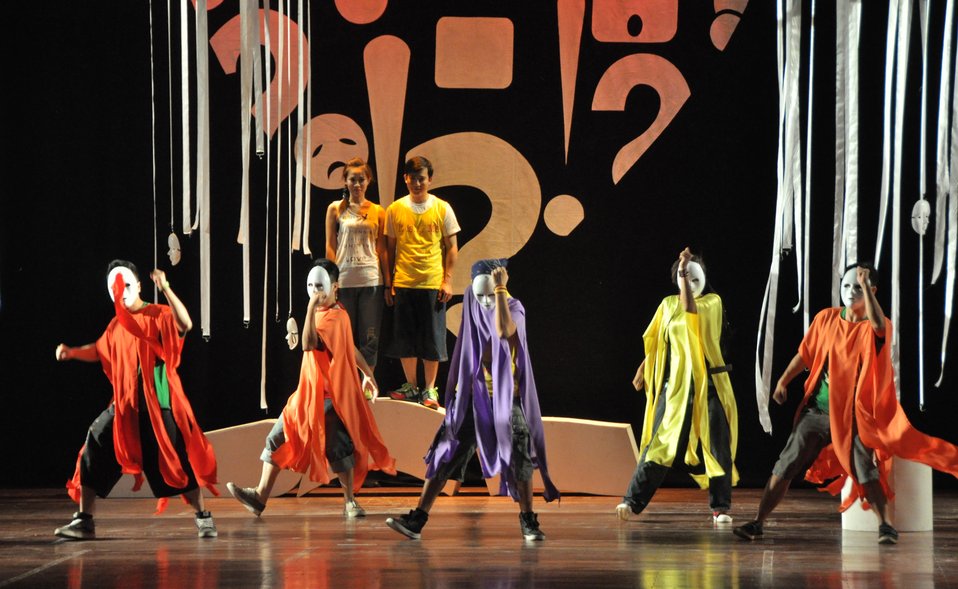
PEPFAR Musical Questions and Exclamations

Hanoi, May 17, 2013